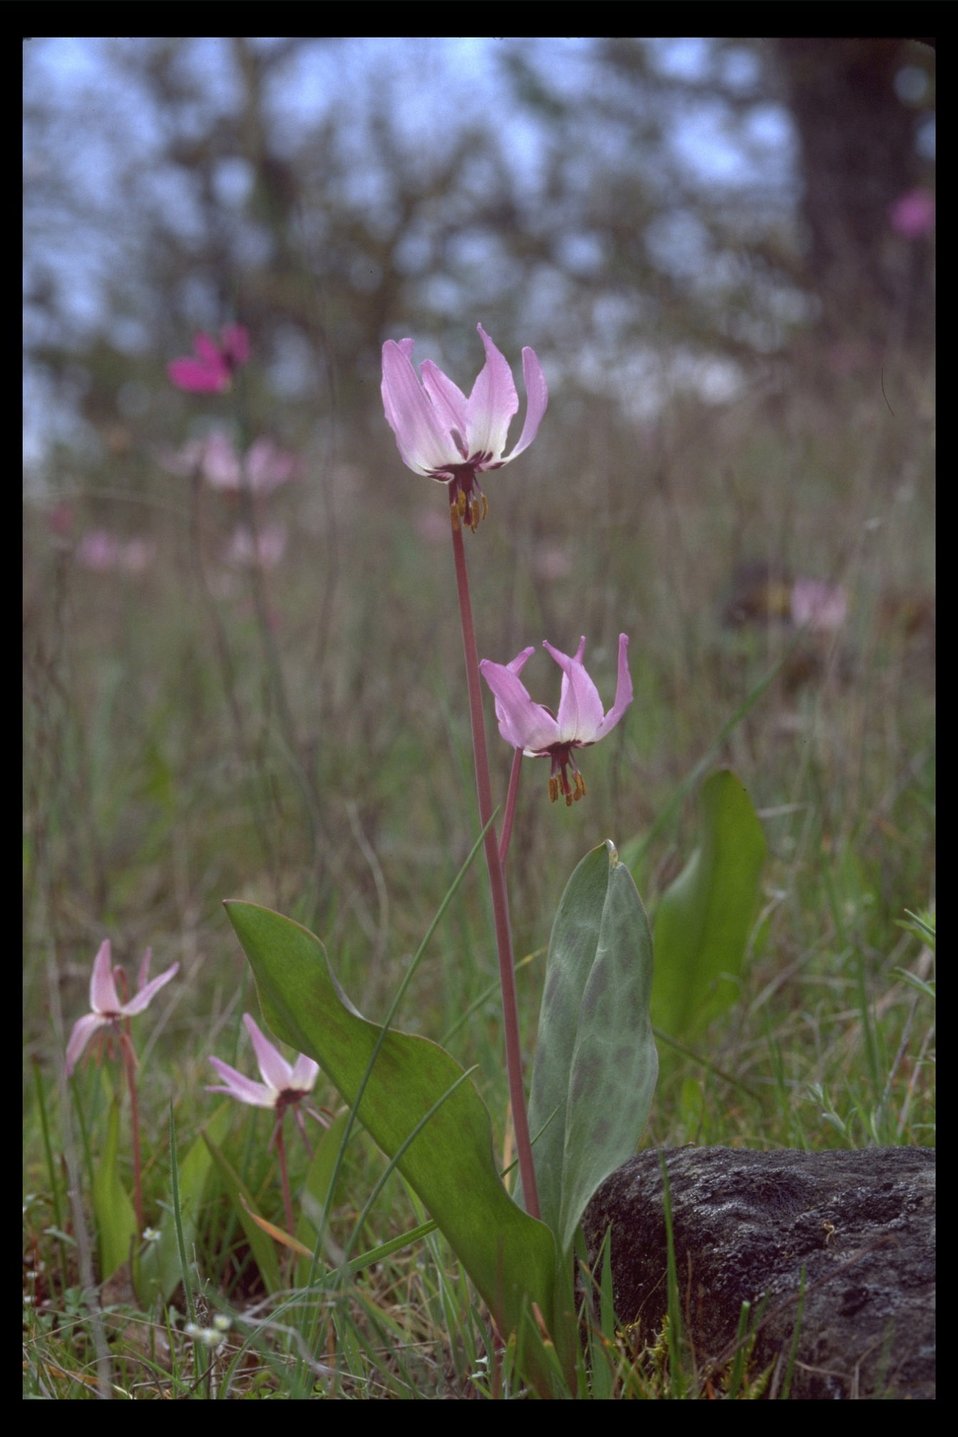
Close up of Henderson's Fawn Lily (Erythronium hendersonii) around Upper Table Rock.